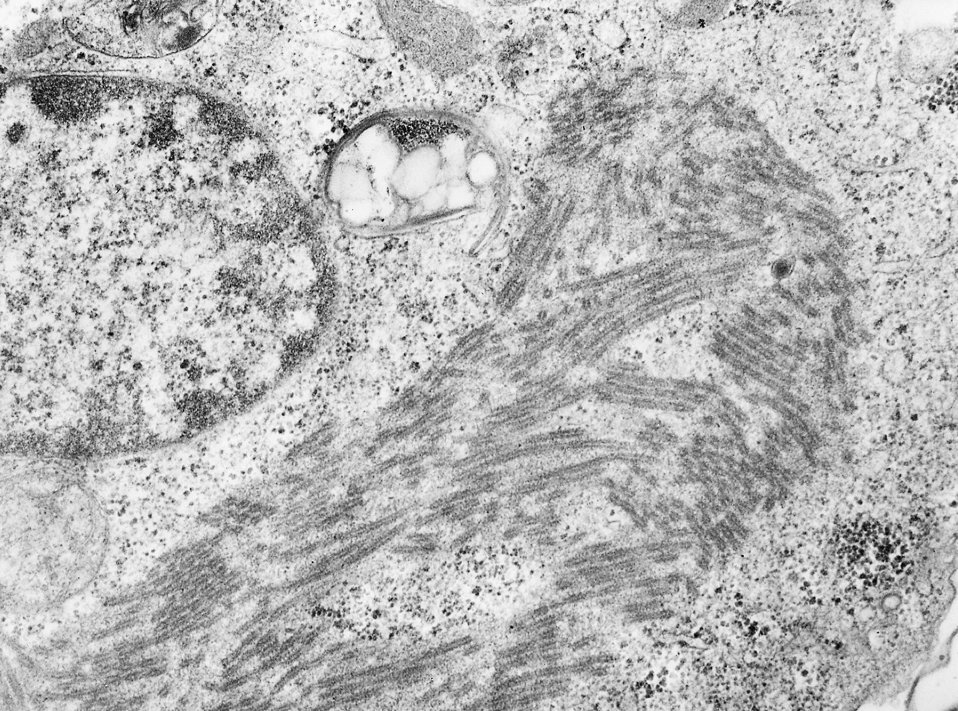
This electron micrograph shows a thin section containing the Ebola virus, the causative agent for African Hemorrhagic Fever.